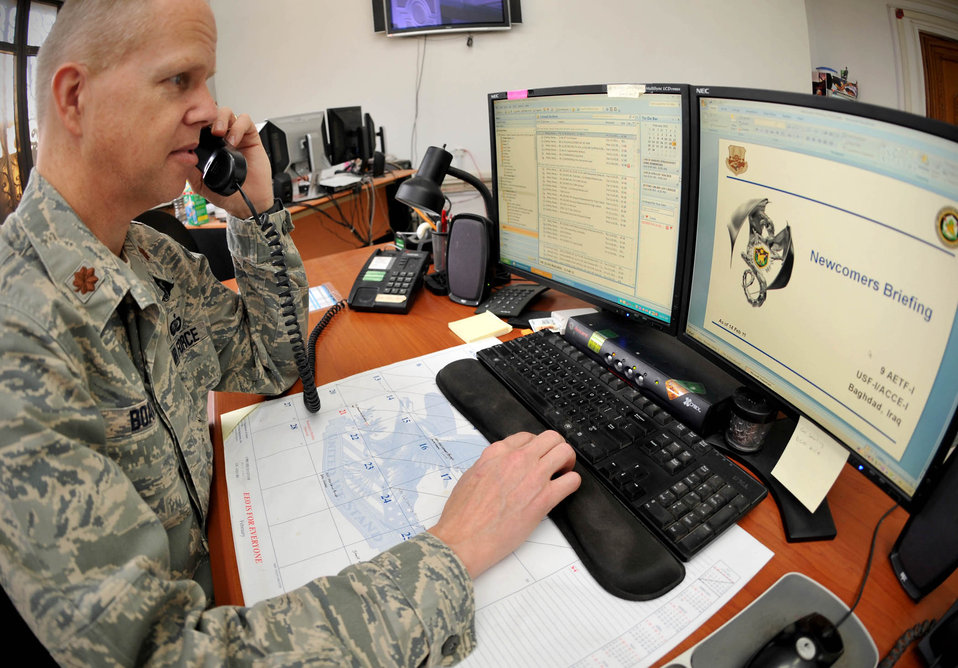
Right Airmen, right job

Maj. Darrell Board looks over a newcomers briefing PowerPoint presentation Feb. 19, 2011, at Camp Victory, Iraq.